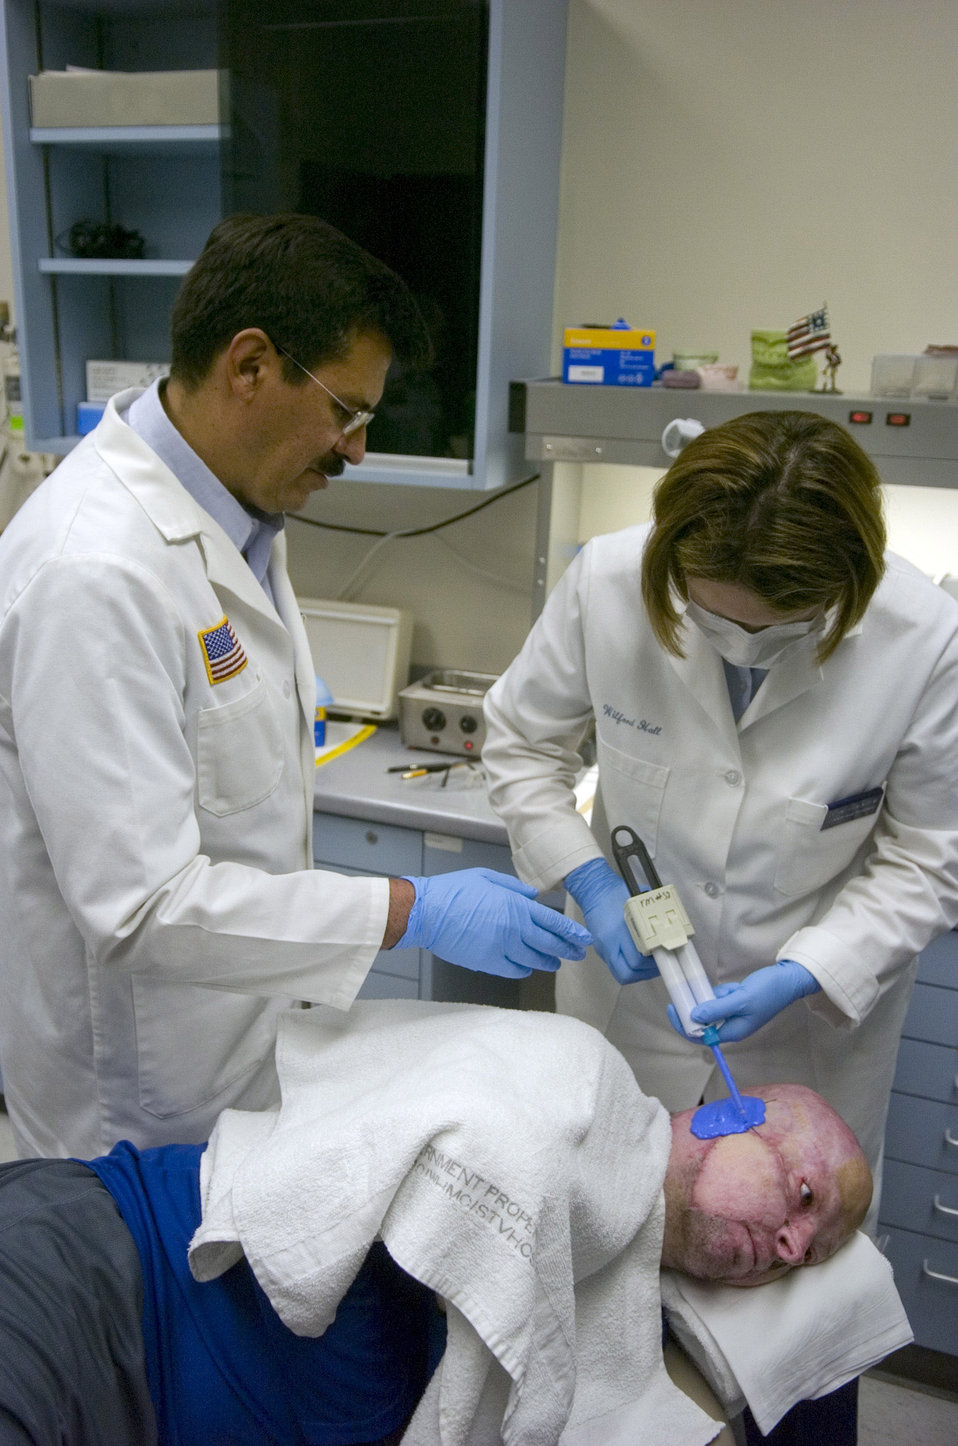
Wounded warrior receives new ears

Capt. (Dr.) Angela Stanton (right) and Col. (Dr.) Joe Villalobos (left) create a 3-D model resin prosthesis mold for Marine Capt. Ryan Voltin at the McGowan Dental Clinic Sept. 29 at Lackland Air Force Base, Texas. Dr. Voltin, an AH-1 Cobra pilot, lost his ears when his helicopter erupted in flames during a training accident in May 2007. Captain Stanton and Dr. Villalobos are fellow maxillofacial prosthodontists assigned to the 59th Medical Wing.